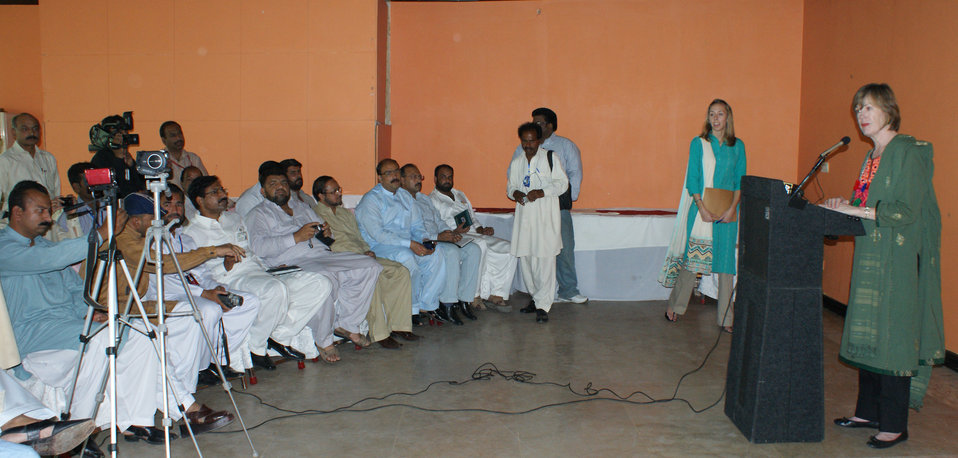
Lady Health Workers

April 15, 2011 - Dr. Marilyn Wyatt, wife of U.S. Ambassador Cameron Munter, speaks at a press conference after her visit to the Lady health house and District Headquarter Hospital in Jhelum.